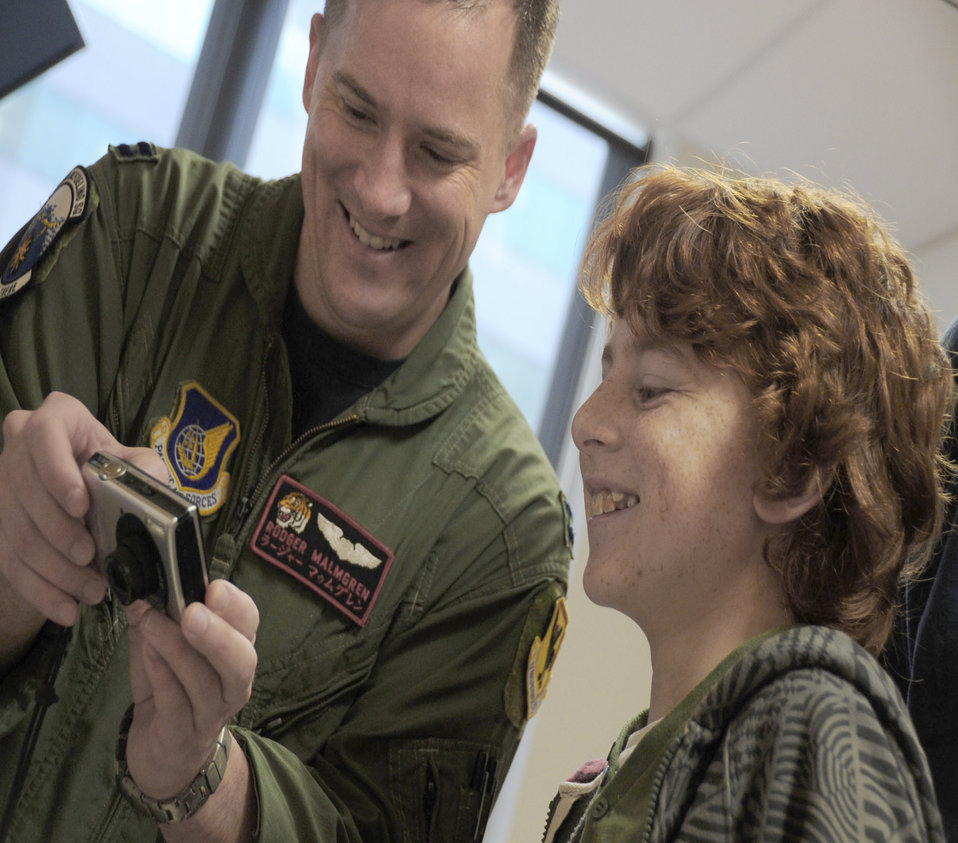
Airmen, Sailors visit Australian childrens hospital

Capt. Rodger Malmgren shows a photo of his aircraft to a patient of the Royal Childrens Hospital here March 1, 2011, in Melbourne, Australia. Captain Malmgren is a KC-135 Stratotanker pilot assigned to the 909th Air Refueling Squadron at Kadena Air Base, Japan. He and four of his aircrew members visited the hospital while participating in the Avalon 2011 Australian International Airshow and Aerospace and Defence Exposition in Geelong, Australia.